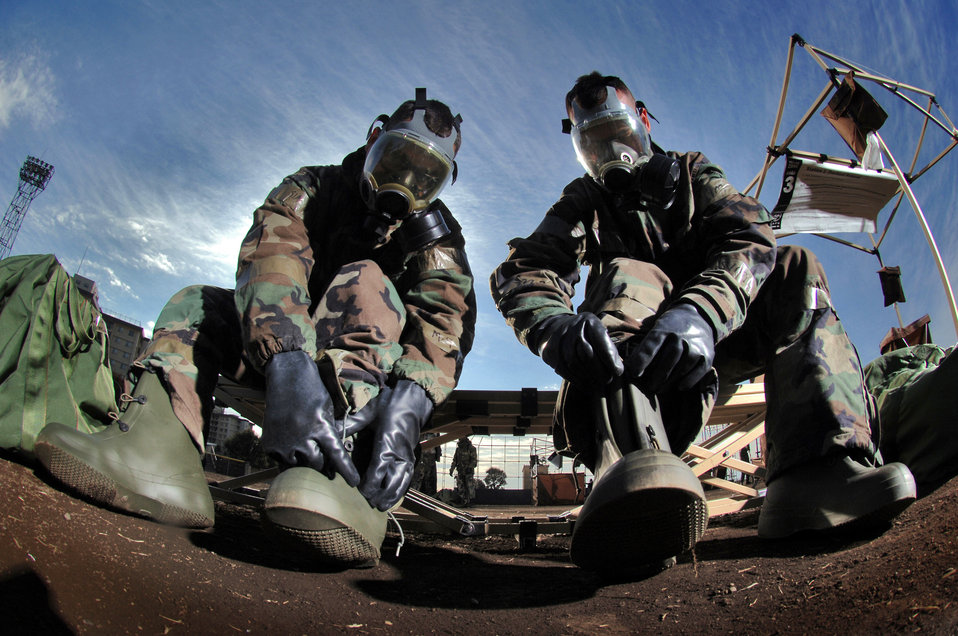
Contamination

YOKOTA AIR BASE, Japan (AFPN) -- Staff Sgts. Mark Freeman (left) and Tom McCauley remove their protective overboots at the contaminated control area during